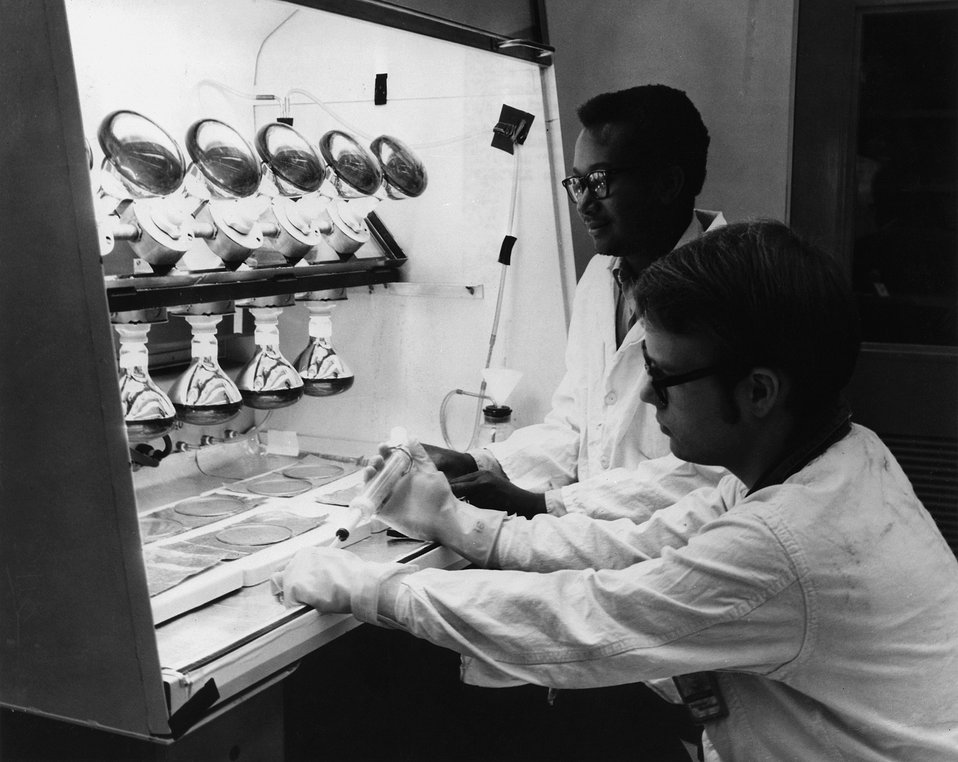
Water samples are tools used to understand and predict underground water movement in the AEC's continuing environmental protection program. c. 1973